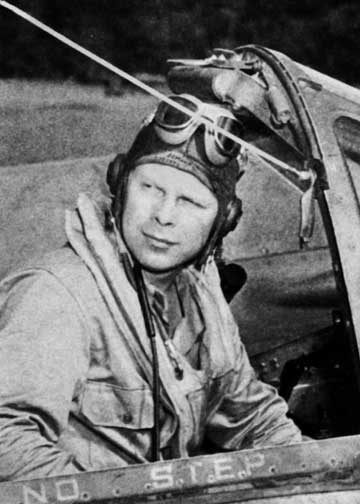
Major Bong

Maj. Richard Bong is the highest-scoring U.S. ace of any war — the “Ace of Aces.”